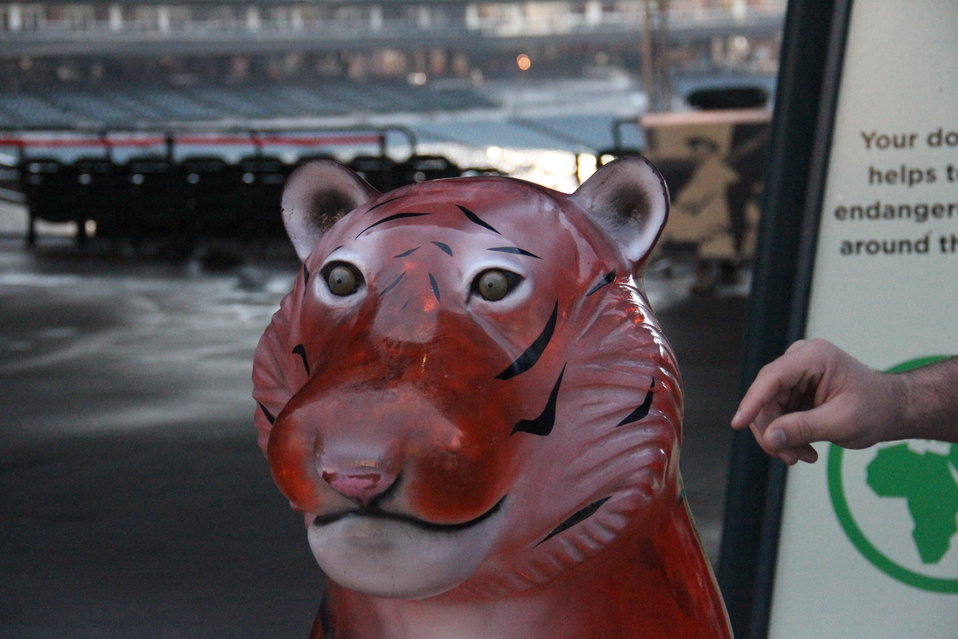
Pennies for Paws2